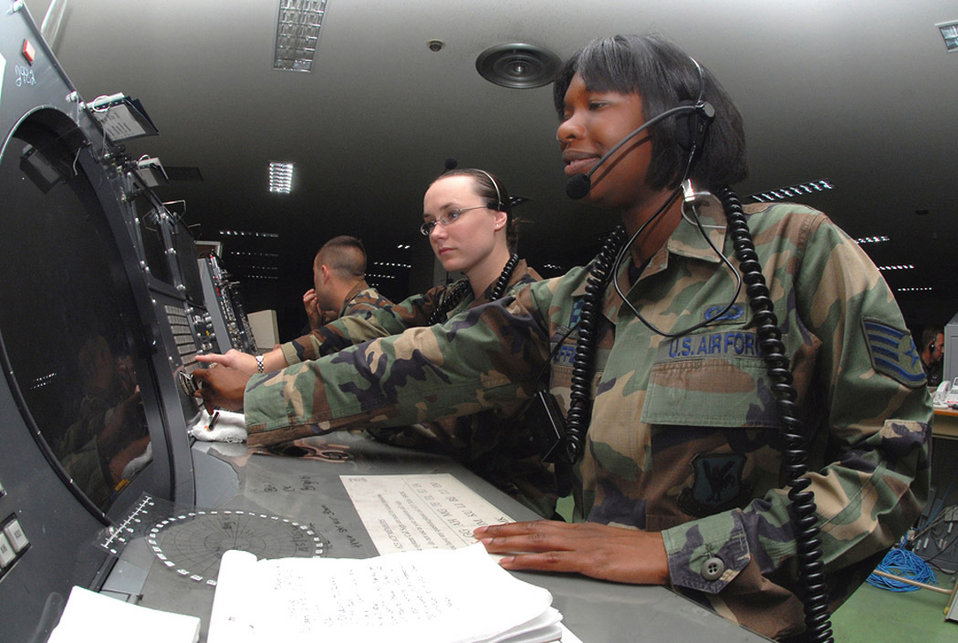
Small Kadena unit, big Air Force job

Staff Sgt. Crystal Sheffield (right) and Airman 1st Class Amber Hoedebeck control a mission by using a Base Air Defense Ground Environment system at Naha Air Base, Japan. They are weapons directors with the 623rd Air Control Flight.